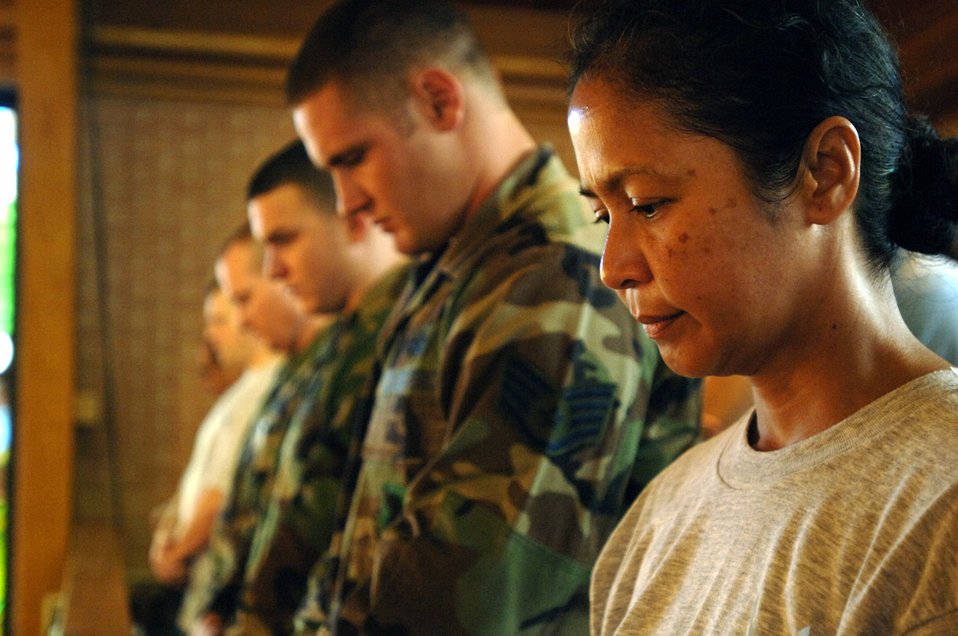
Tyndall ceremony honors 9/11 heroes, victims

More than four hundred military and civilian personnel attended a special remembrance ceremony Sept. 11 at the Tyndall Air Force Base, Fla., chapel to commemorate the victims and heroes of the 9/11 attacks.